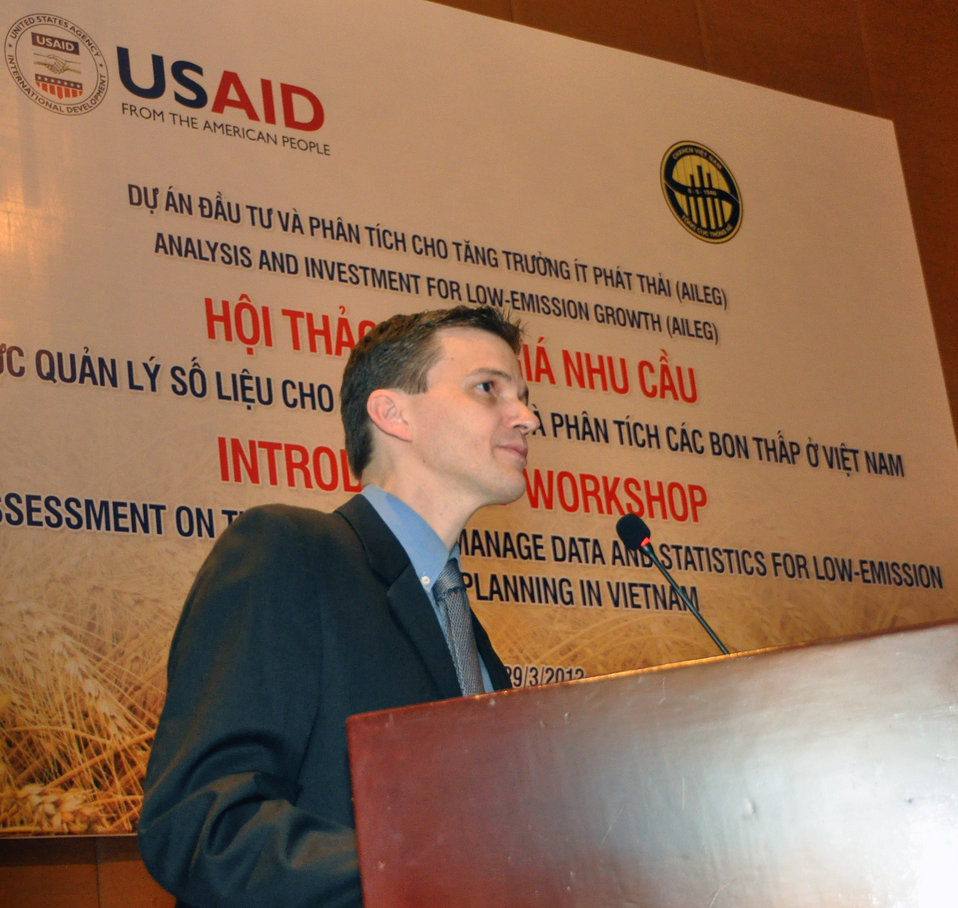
Patrick Smith, USAID/Vietnam Climate Change Advisor